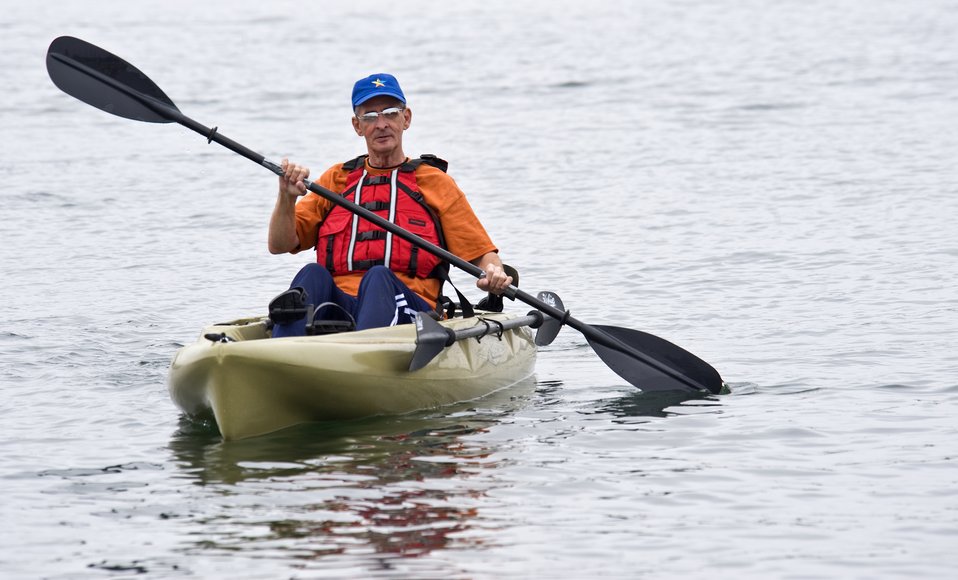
Disabled veterans sports clinic begins in San Diego

Eddie Burton, a disabled Air Force veteran who served from 1963 to 1975, takes part in kayaking around Mission Bay during the opening day of events for the 2010 National Veterans Summer Sports Clinic Sept. 20, 2010, in San Diego, Calif. The sports clinic promotes rehabilitation by teaching summer sporting activities to veterans with significant physical or psychological impairments.